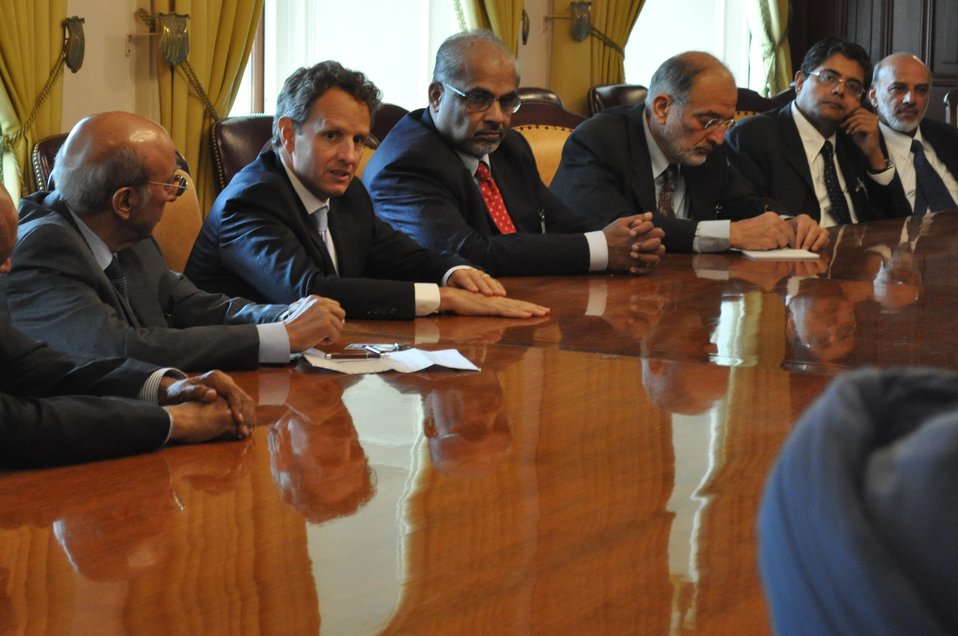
Secretary Geithner meeting with Indian delegation of the U.S.-India Aspen Strategy Group, 8/3/2010

On Tuesday, August 3, 2010, Secretary Tim Geithner met with the Indian delegation of the U.S.-India Aspen Strategy Group to discuss economic and other policy priorities between our two nations. Since the Secretary’s visit to Delhi in April to launch the U.S.-India Economic and Financial Partnership, the Treasury Department has initiated working groups focused on the deepening of capital markets and on macroeconomic issues.